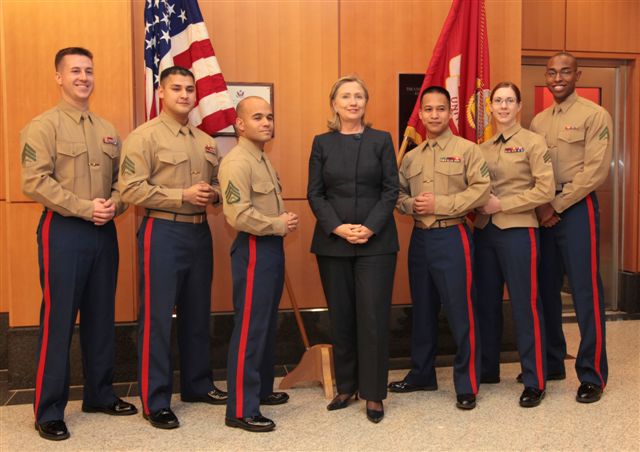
Secretary Clinton Meets With U.S. Marines

U.S. Secretary of State Hillary Rodham Clinton meets with U.S. Marines at the U.S. Embassy Astana in Astana, Kazakhstan, on December 1, 2010.